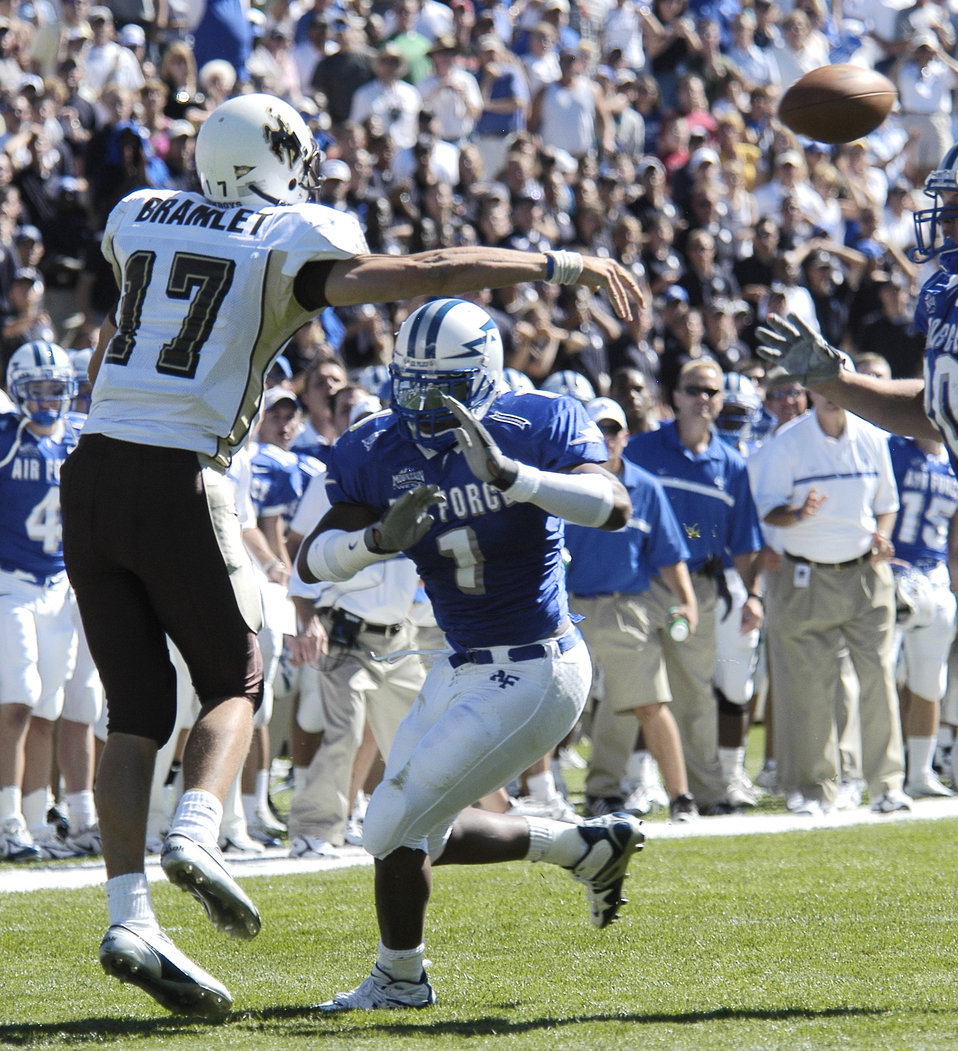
U.S. AIR FORCE ACADEMY, Colo. -- Air Force linebacker Overton Spence puts pressure on University of Wyoming quarterback Corey Bramlett, forcing the Cowboy signal caller to unload early here Sept. 17. The Cowboys went on to edge the Falcons 29-28.